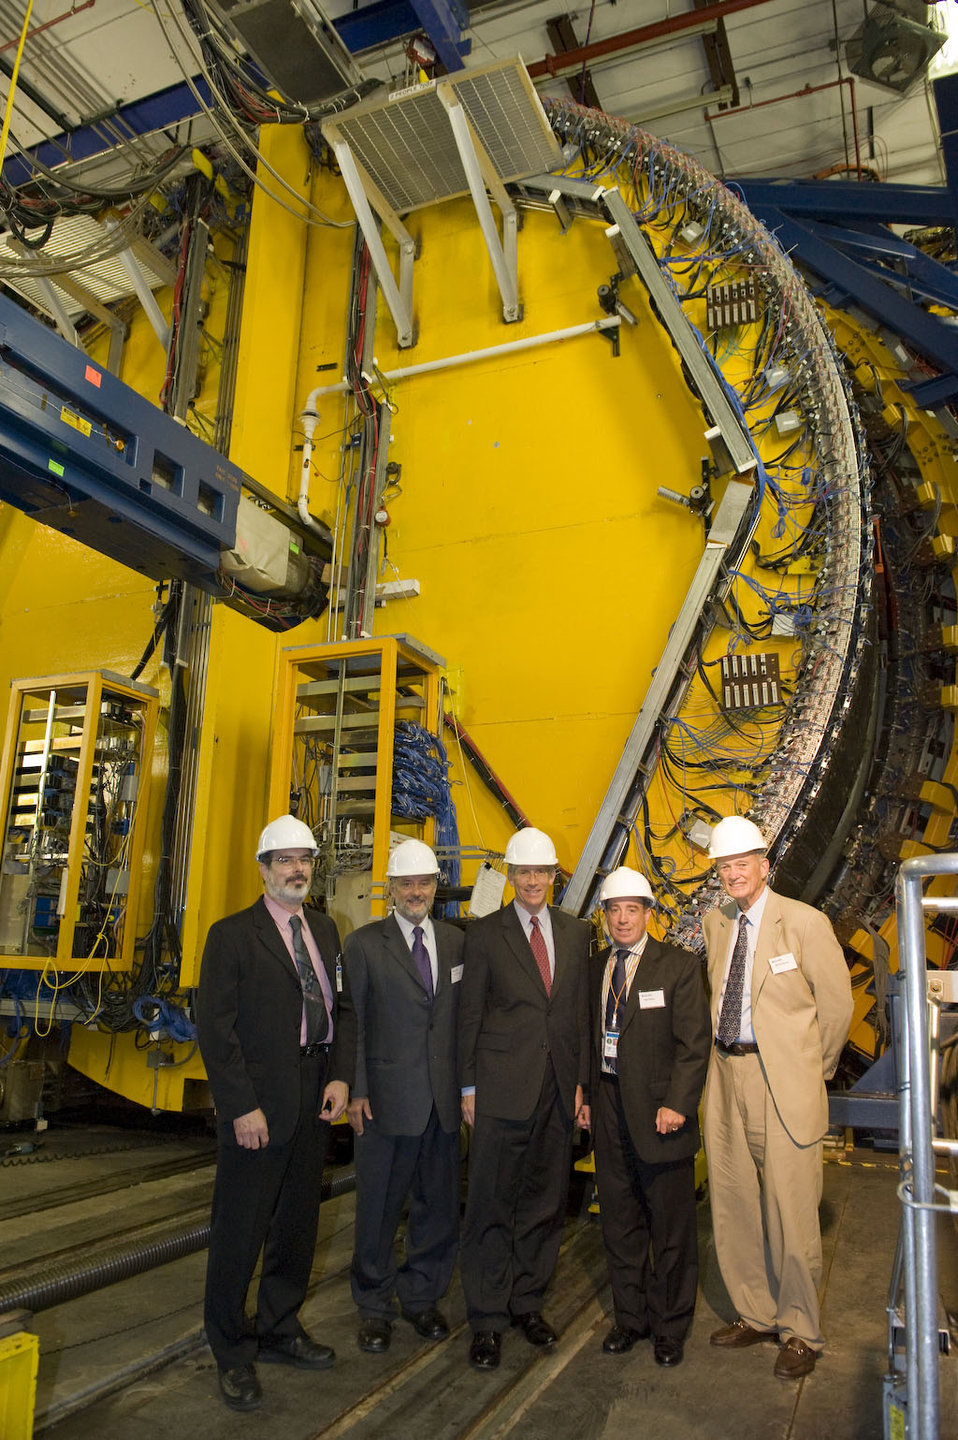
During his tour of the laboratory, Deputy Secretary Poneman (center) visited the 45-foot-high Collider Detector at Fermilab (CDF).